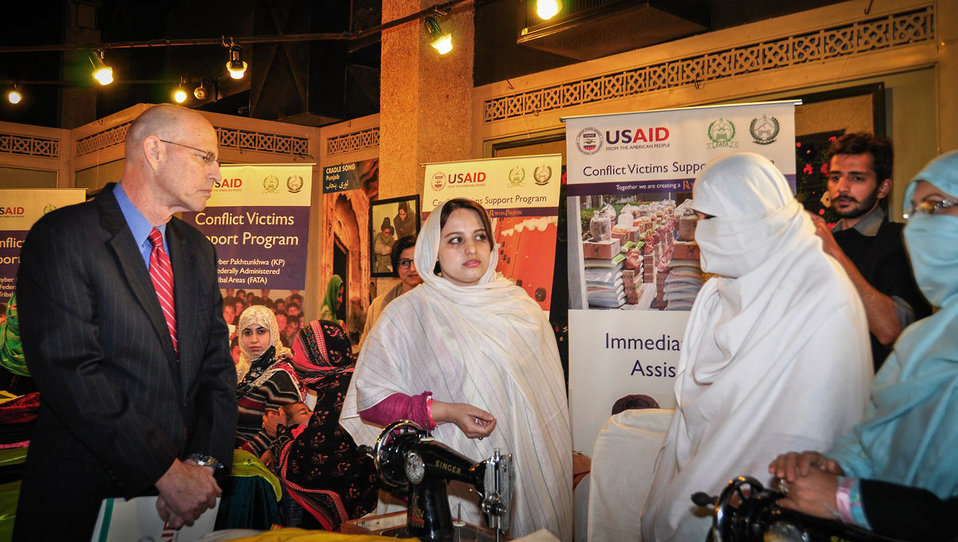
USAID Conflict Victims Support Program

Islamabad, March 7, 2014 - USAID Mission Director, Gregory Gottlieb with women from Khyber Pakhtunkhwa and FATA who received vocational training through the USAID Conflict Support Program to improve their incomes.